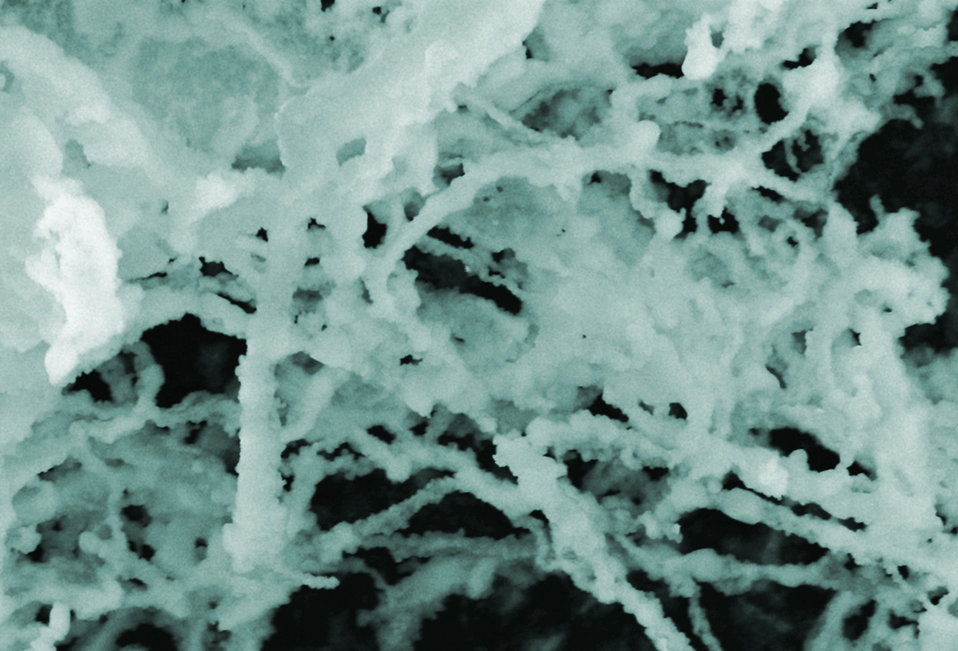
Nanoparticle-Protein Interactions

Insulin, one of the most common proteins in human blood, can accumulate into fibrous masses when it misfolds. Research by a team at NIST indicates that gold nanoparticles apparently increase insulin's tendency to form these fibers.